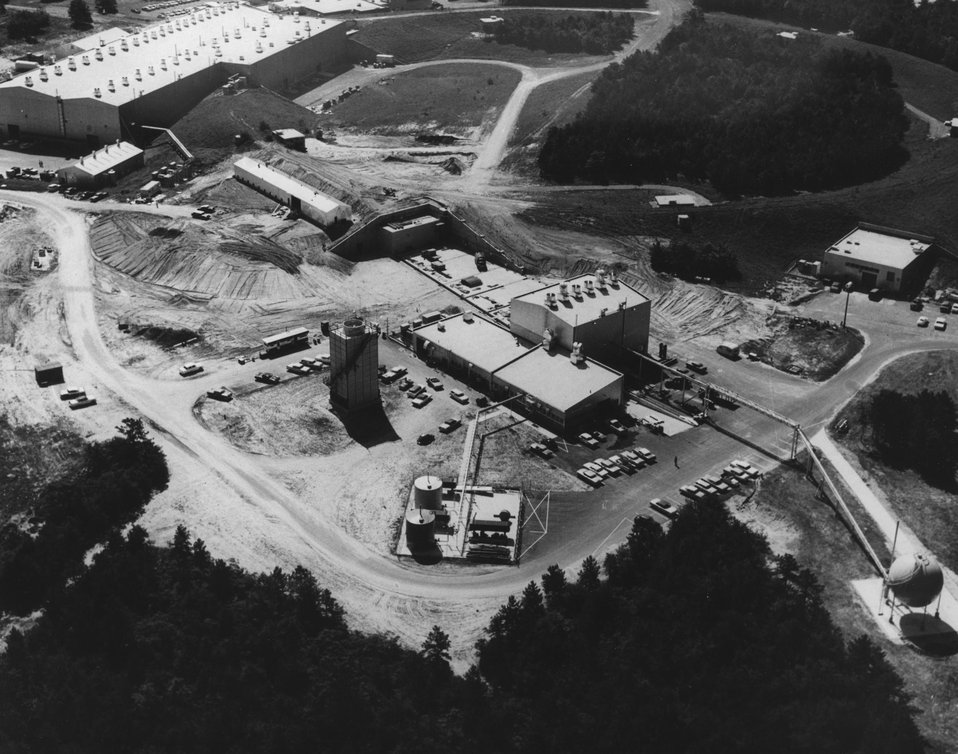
Construction of the 80-inch Bubble Chamber Building. In the right foreground is the safety sphere for the emergency containment of hydrogen; in the center is the gas storage area. To the rear of the Bubble Chamber Building is the AGS magnet tunnel ring. To the left of the magnet ring is the Experimental Building. c. 1963